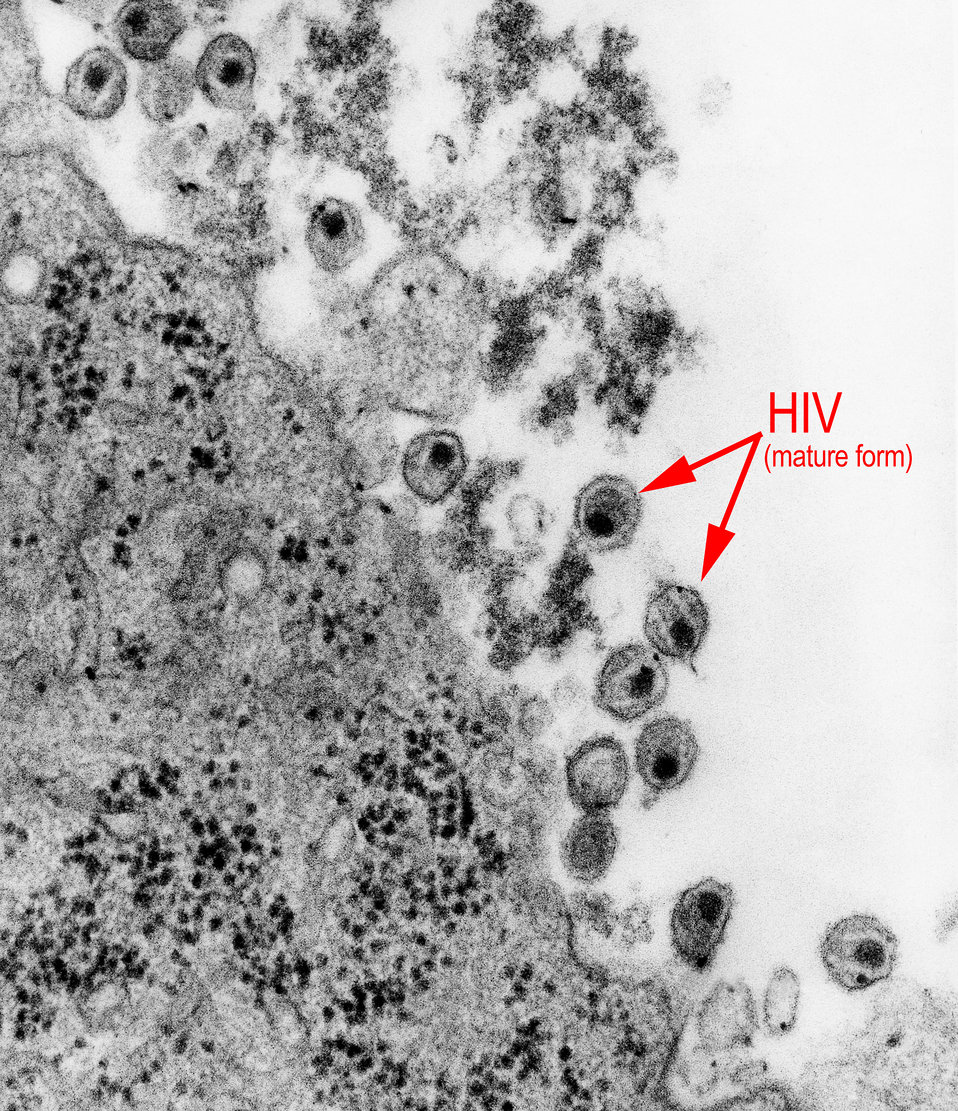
This highly magnified transmission electron micrographic (TEM) image revealed the presence of mature forms of the human immunodeficiency virus (HIV) in a tissue sample under investigation.